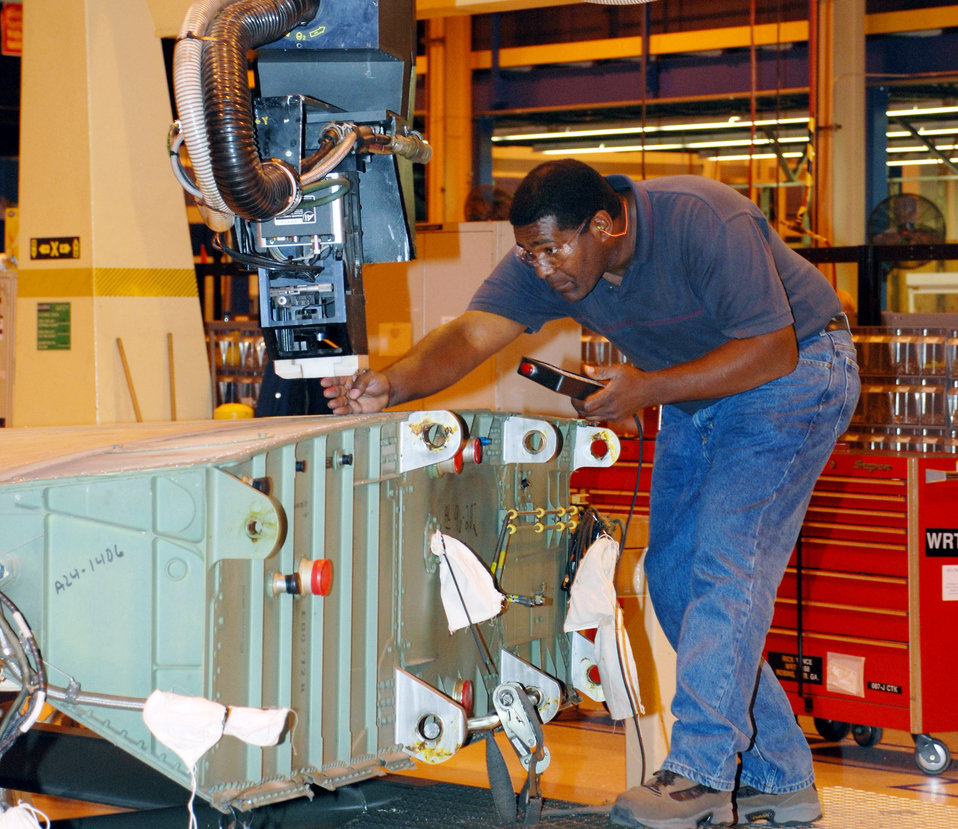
DLA-Warner Robins shop humming along following transition

Gene Manns, Air Force sheet metal mechanic, programs the robotic machinery to remove screws from the top panel of an F-15 Eagle wing in the F-15 wing shop at Robins Air Force Base, Ga.